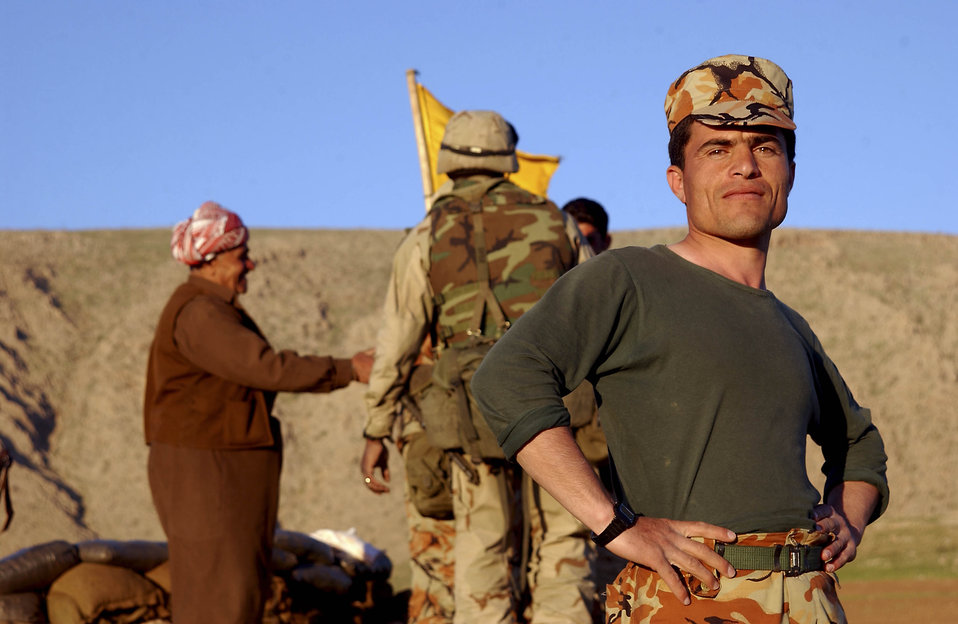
Tea anyone?

OPERATION IRAQI FREEDOM -- Rizgar Mohammed is a Kurdish soldier helping coalition forces in northern Iraq. He and other soldiers man a tiny observation post near an American unit at Bashur Airfield in northern Iraq. When airmen from the airfield visit the stream next to their post to draw water, the soldier takes hot, sweet tea to his American allies.